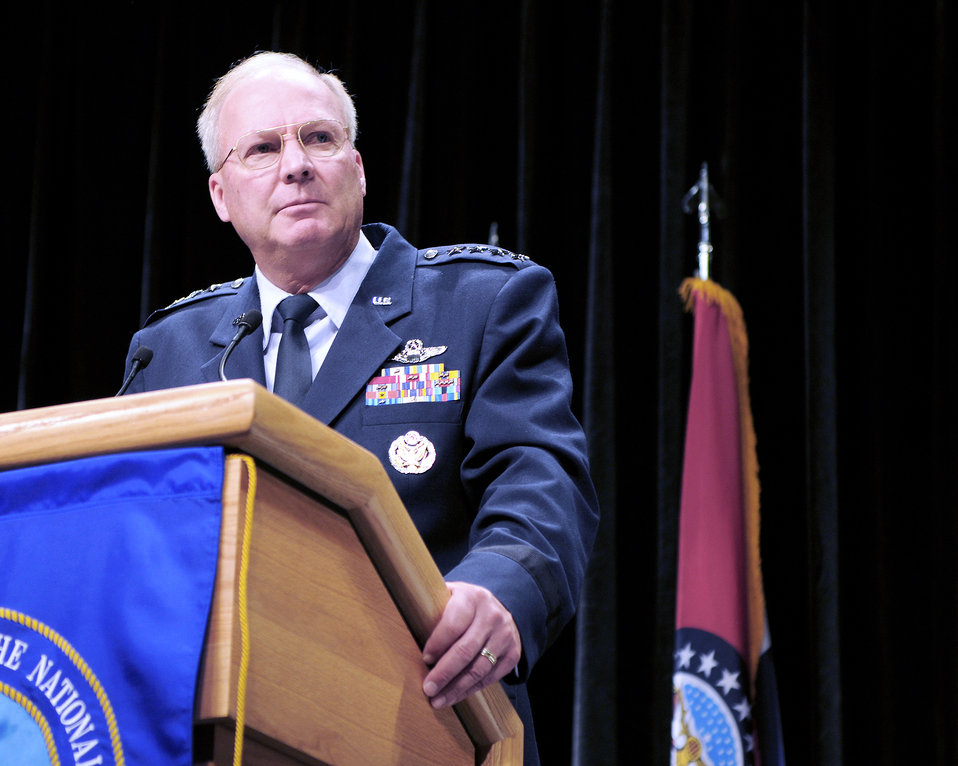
McKinley tells Guard enlisted force to prepare for prolonged overseas role

Gen. Craig McKinley, the chief of the National Guard Bureau, tells Guard members attending the 39th Annual Conference of the Enlisted Association of the National Guard of the United States in St. Louis Aug. 8, 2010, that the National Guard likely will continue to play a significant role in overseas contingency operations for the foreseeable future.